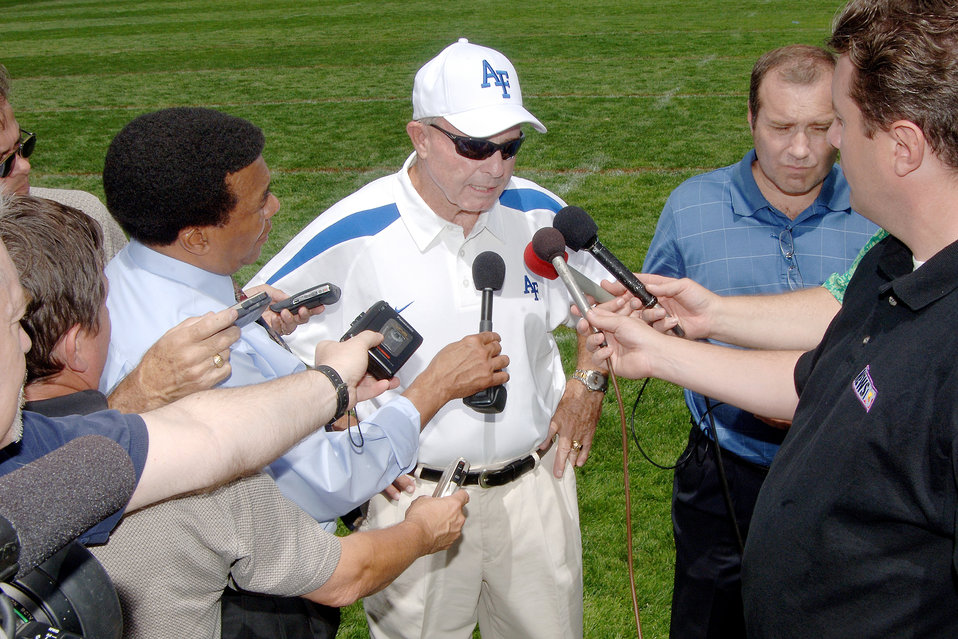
Falcons eye 'Return to Dominance'

Air Force head football coach Fisher DeBerry addresses media day reporters at the U.S. Air Force Academy following his team's first practice of the year. Despite two straight losing seasons, DeBerry enters his 23rd campaign patrolling the Falcon sidelines as the all-time winningest coach in service academy history with a 165-101-1 overall record.